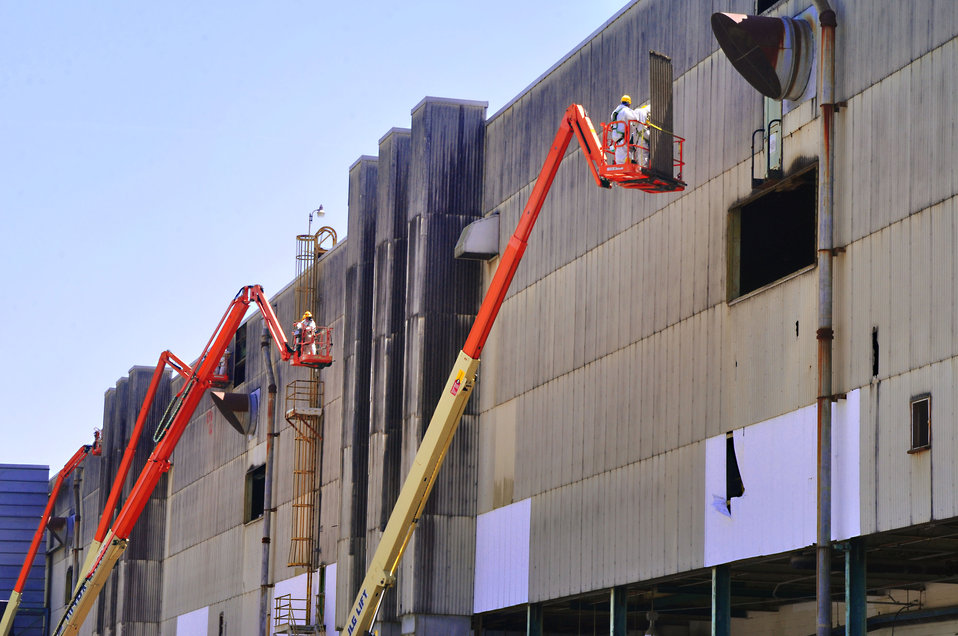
Transite Panels Removal from K-31 Building2014 Oak Ridge 2014 Oak Ridge

14-057 DOE photo Lynn Freeny 5-6-2014 ETTP K-31 Oak Ridge Tennessee